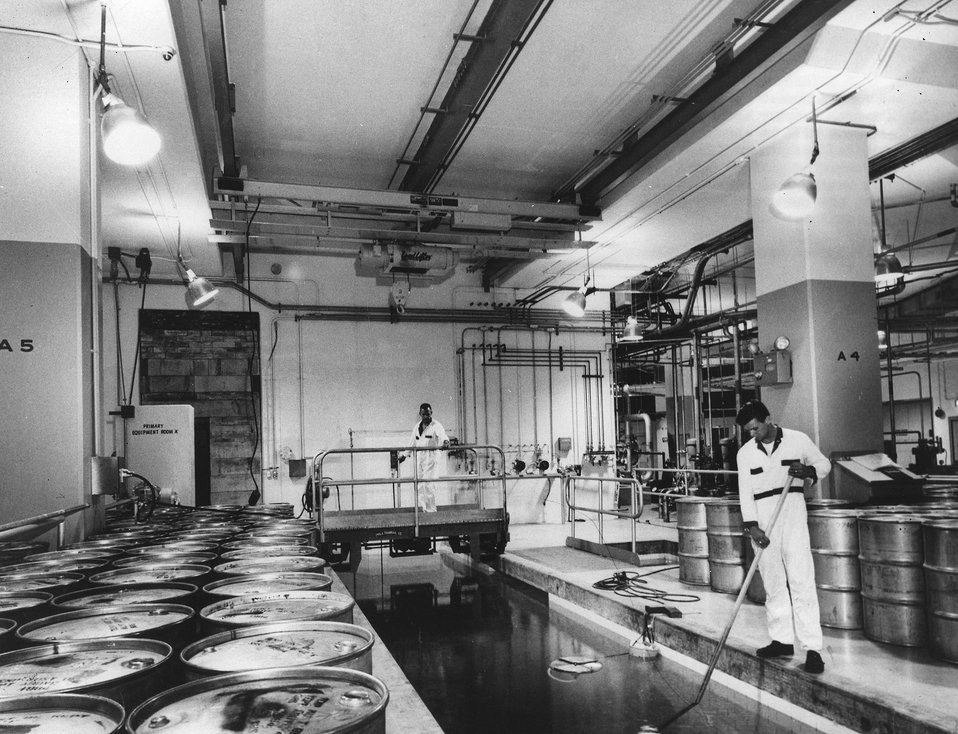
The fuel canal, located on the lowest floor of the High Flux Beam Reactor building, in which spent fuel elements will be stored and then loaded into shielded containers for shipment to an offsite processing plant. c. 1965